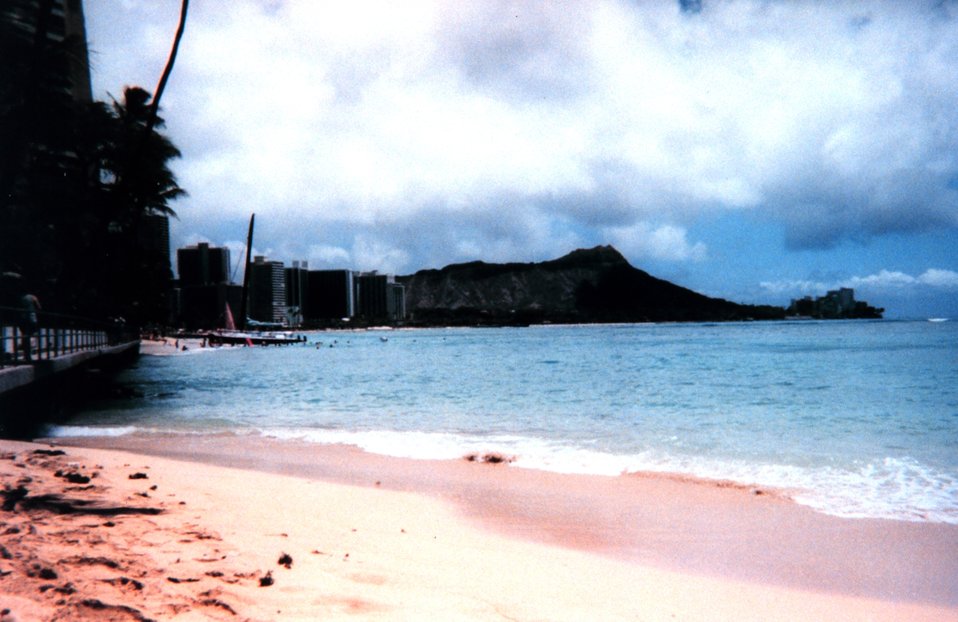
A silhouette of Diamondhead as seen from Waikiki.